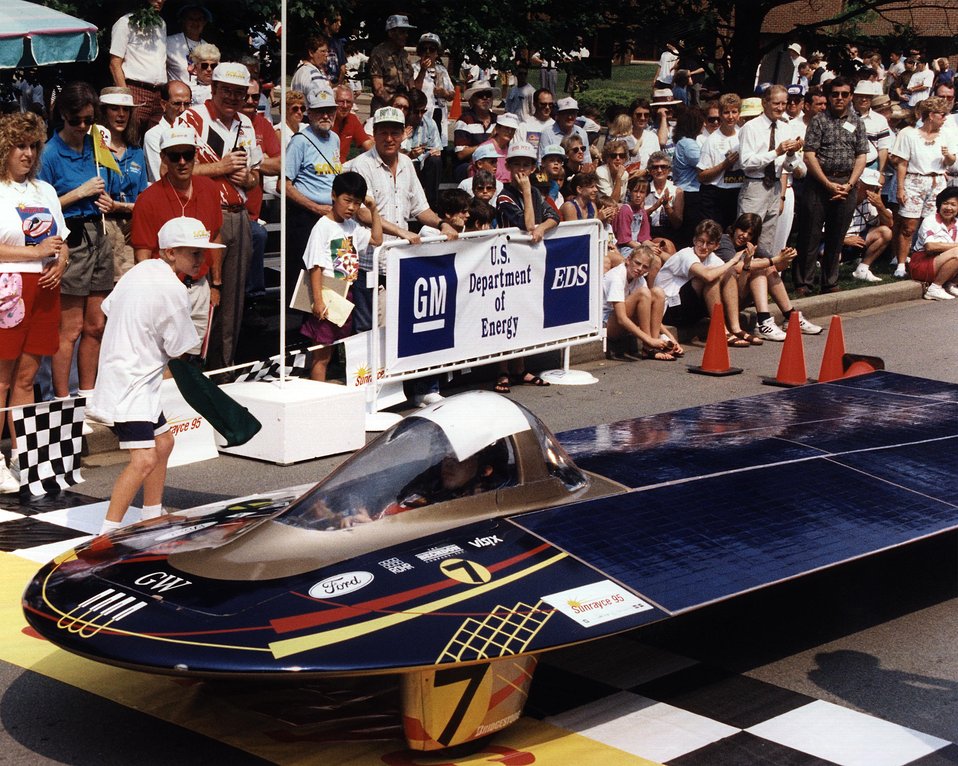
GEORGE WASHINGTON UNIVERSITY CAME IN FOURTH WITH 'GW.'